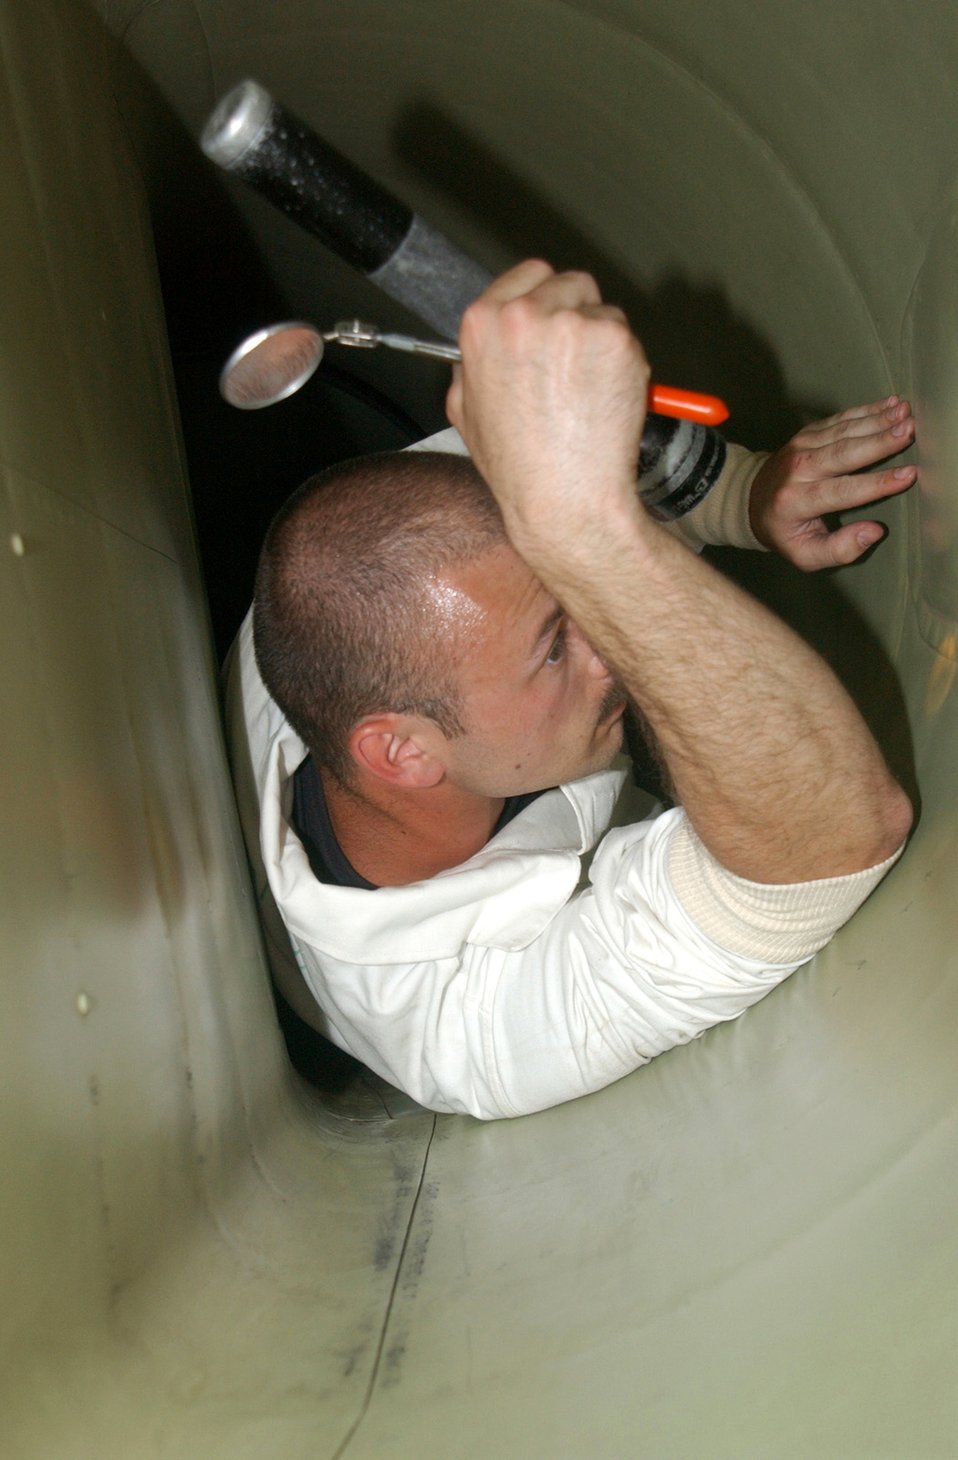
U-2 maintainers boast streaking hot record

Staff Sgt. Nathan Stillwell inspects the inside of a U-2